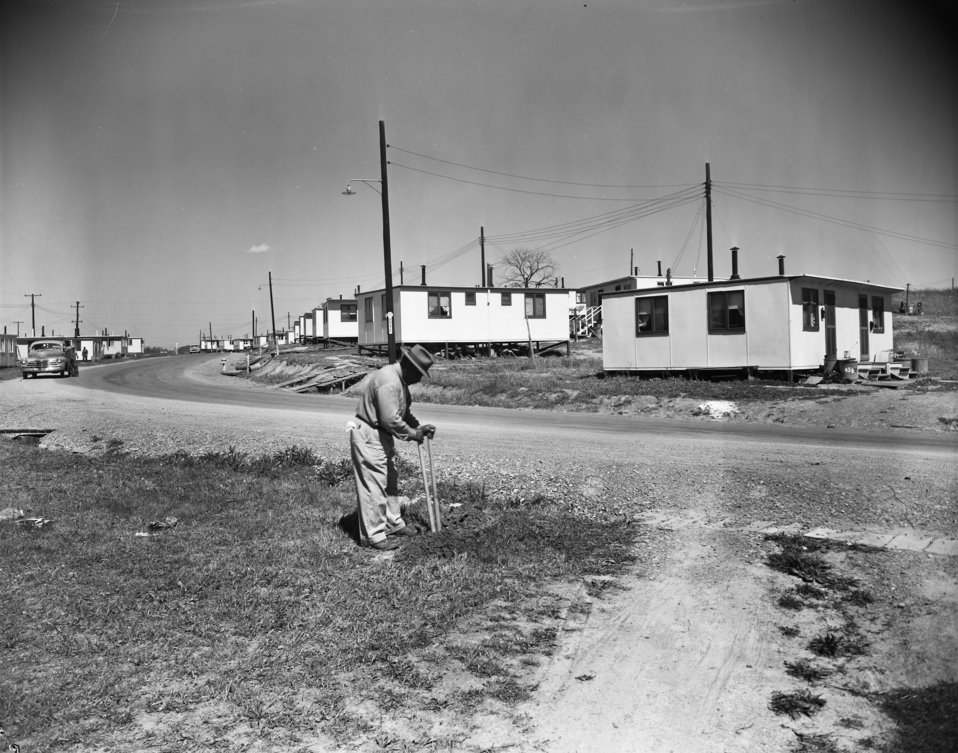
Housing Houston Ave Oak Ridge 1949

5505-5 DOE photo Ed Westcott 4-1949 Oak Ridge Tennessee